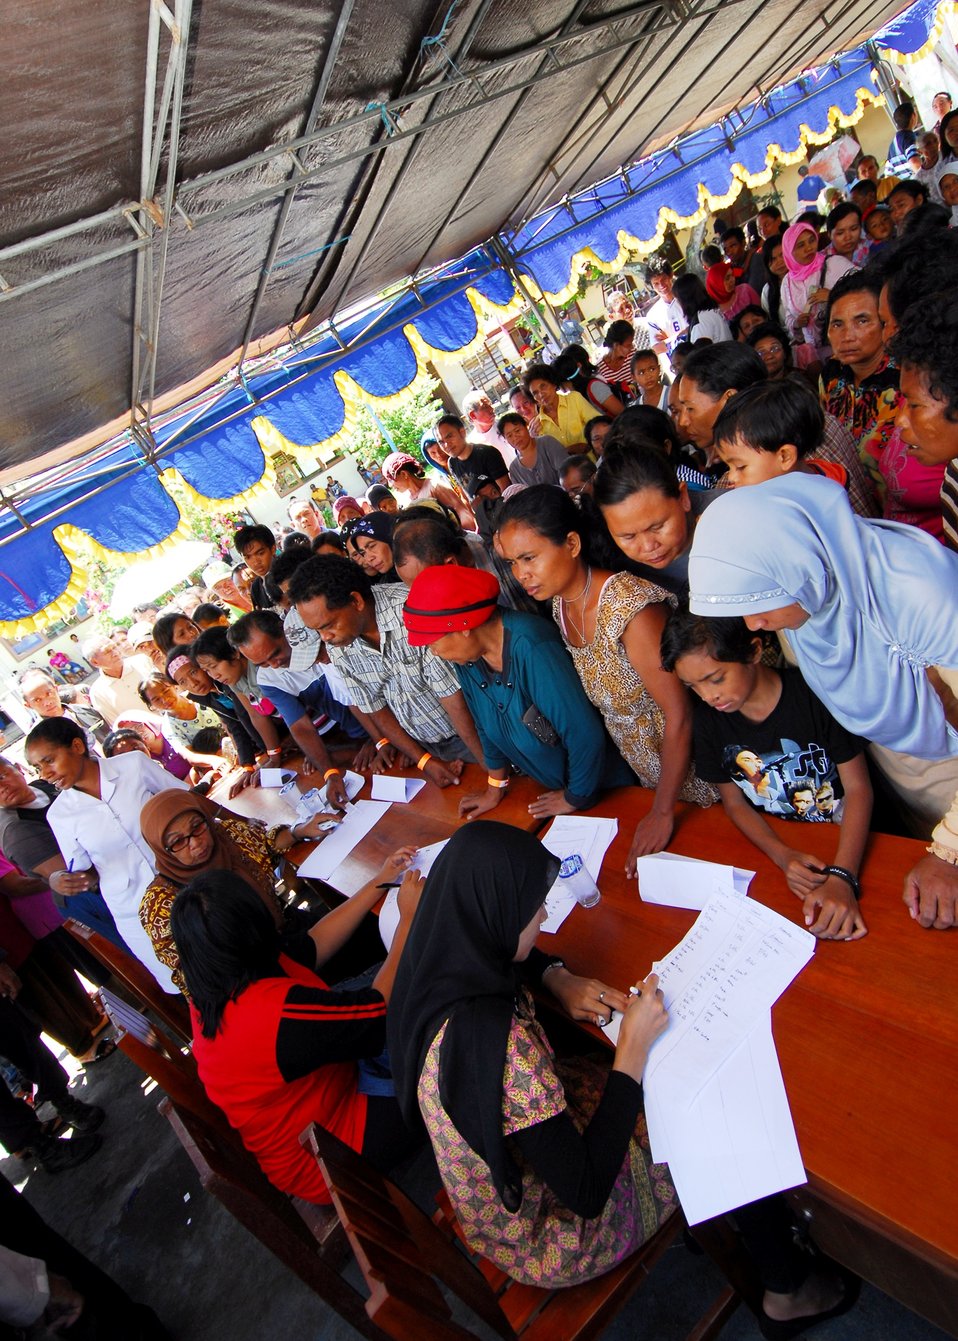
Newly arrived patients wait in line to check in during an engineering civic action program in Tobelo, Indonesia, on July 14, 2010. USNS Mercy (T-AH 19) is in the North Maluku Islands conducting Pacific Partnership 2010, the fifth in a series of annual U.S. Pacific Fleet endeavors conducted in Indonesia as a disaster relief exercise to strengthen regional partnerships.